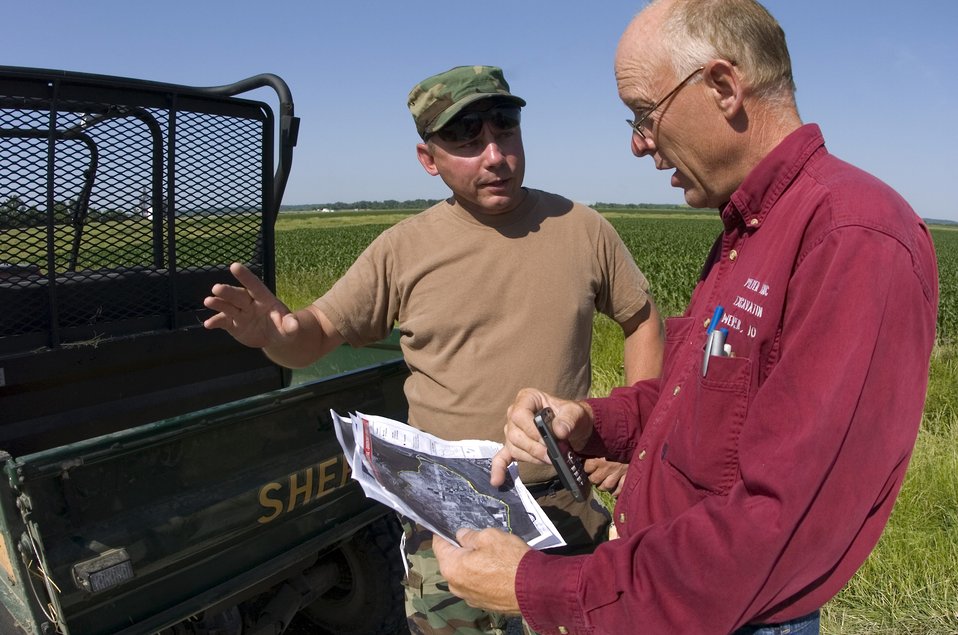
Air Guard prevents erosion

Senior Master Sgt. William Davline speaks with Mike Pieper, the Green Bay Bottom Levee and Draining District chairman, June 18. The town of Green Bay Bottom, Iowa, is in critical condition because it iss where the Skunk River meets the Mississippi River. Approximately 14,000 acres of farmland is in danger of erosion if the flooding is not controlled. Sergeant Davline is Air National Guardsman assigned to the 185th Air Refueling Wing located in Sioux City, Iowa.